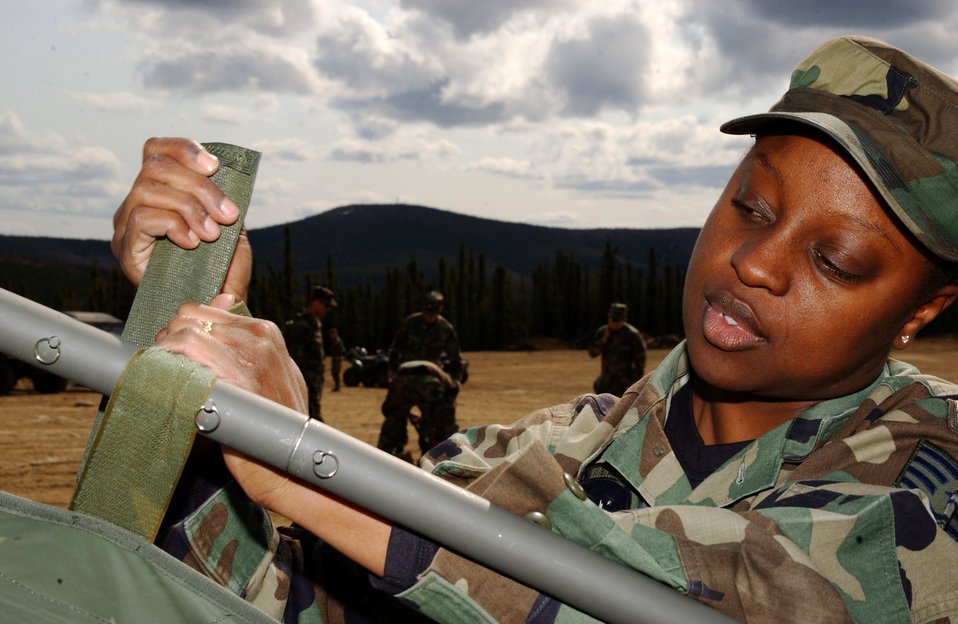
Practice makes perfect during Ursa Minor

Staff Sgt. Jeannette Sudduth attaches the canopy to the frame of a crew tent May 15 during an exercise at Eielson Air Force Base, Alaska. The 3rd Air Support Operations Squadron Airman is participating in Operation Ursa Minor, a three-day field training exercise designed to provide hands-on combat training and experience to Airmen before they deploy to a combat area.